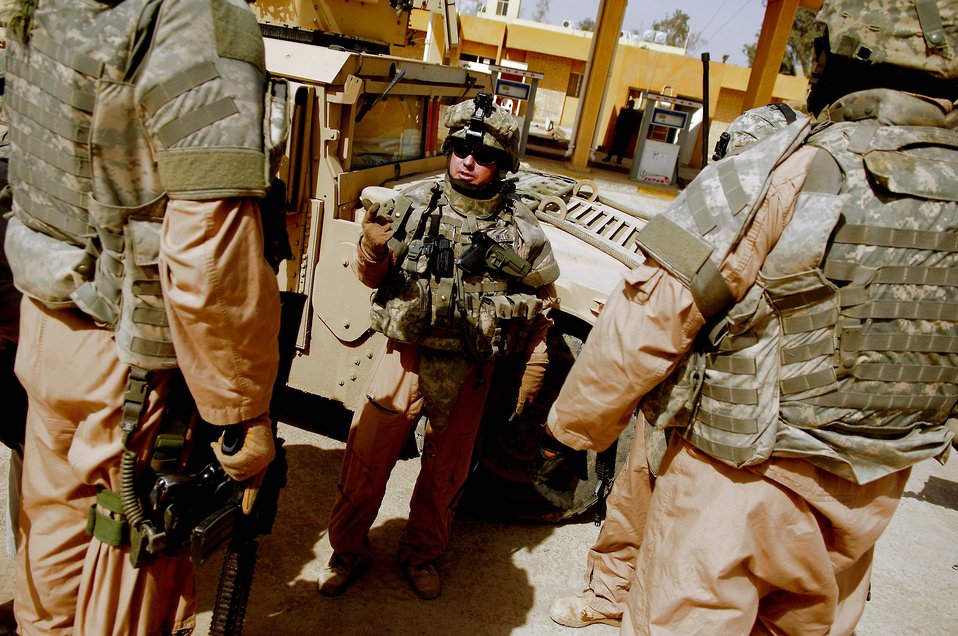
On patrol

Tech Sgt. Terry Miller briefs his squad after arriving at the national police joint security station Mar. 3 in Sayday, Iraq. Sergeant Miller is assigned to Detachment 3 of the 732nd Security Forces Squadron at Sather Air Base, Iraq, and is deployed from the 90th Security Forces Squadron, F.E. Warren Air Force Base, Wyo.